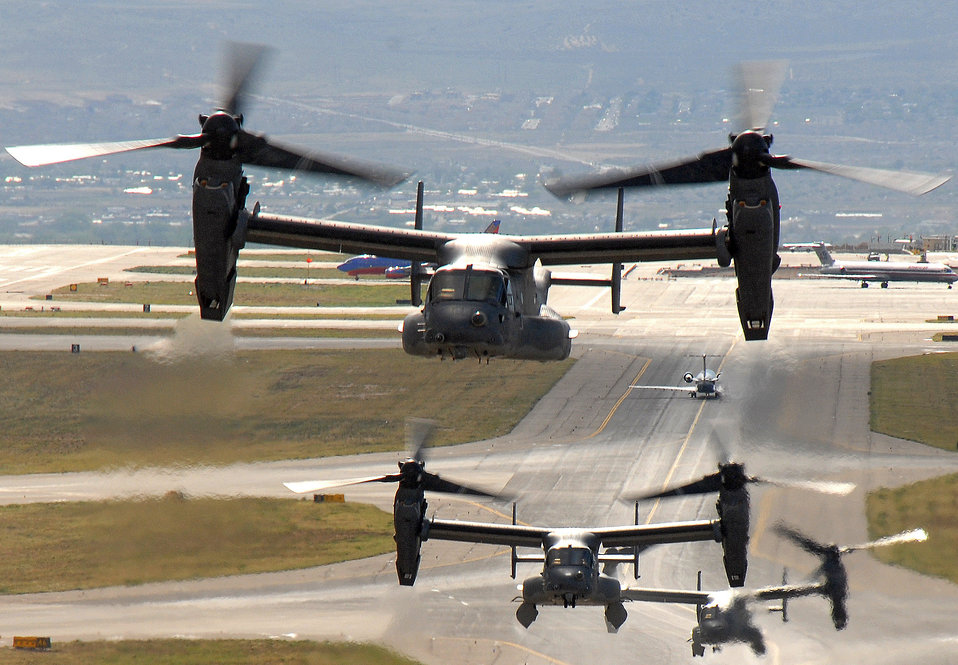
A covey of Osprey

Air Force CV-22 Ospreys take off from a Kirtland Air Force Base, N.M. May 1 for a training mission. The Osprey is a tiltrotor aircraft that combines vertical takeoff, hover and landing qualities of a helicopter with the normal flight characteristics of a turboprop aircraft.